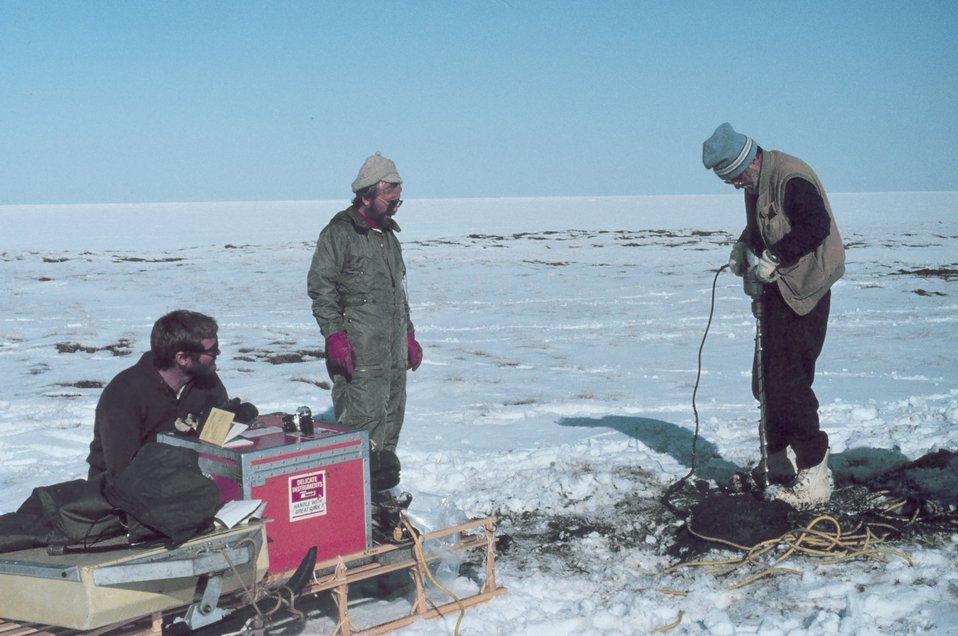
Scientists transported by helicopter drilling into permafrost as spring melting begins on Alaska North Slope. Oceanic ice extends to the horizon.